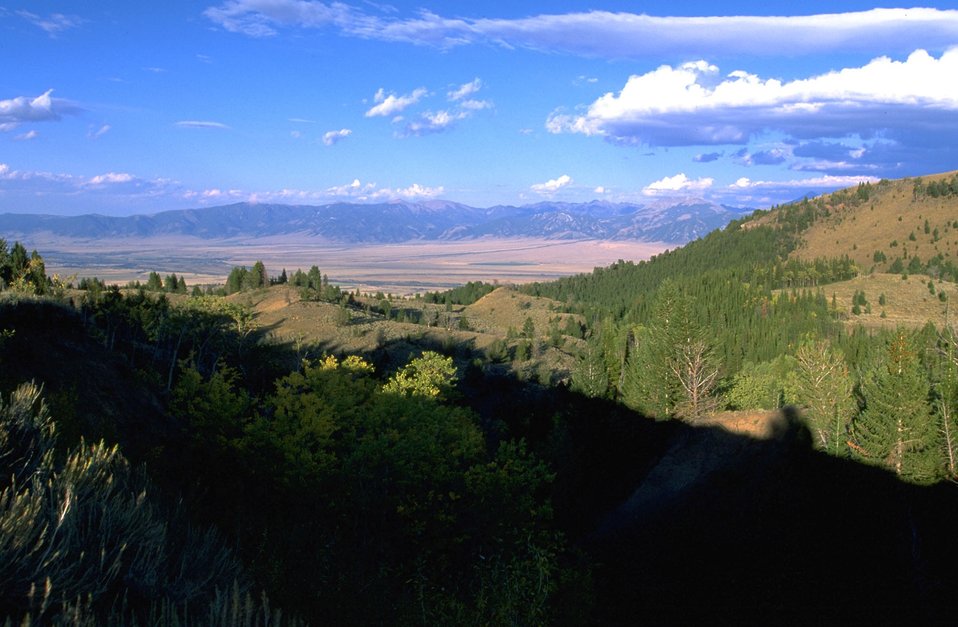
View of a portion of the Study Area